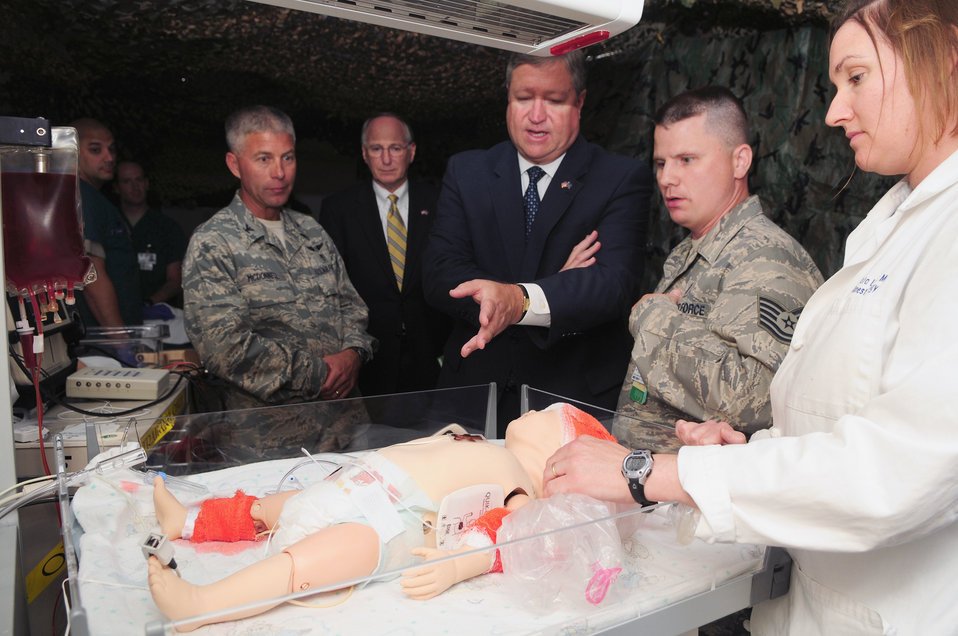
Secretary of the Air Force visits RAF Lakenheath

Secretary of the Air Force Michael Donley (center) observes a medical training demonstration July 22, 2010, by Airmen from the 48th Medical Group at Royal Air Force Lakenheath, England. Secretary Donley also visited the 48th Mission Support Group youth center, the 48th Maintenance Group engine shop and the 48th Operations Group Strike Eagle Complex at RAF Lakenheath.